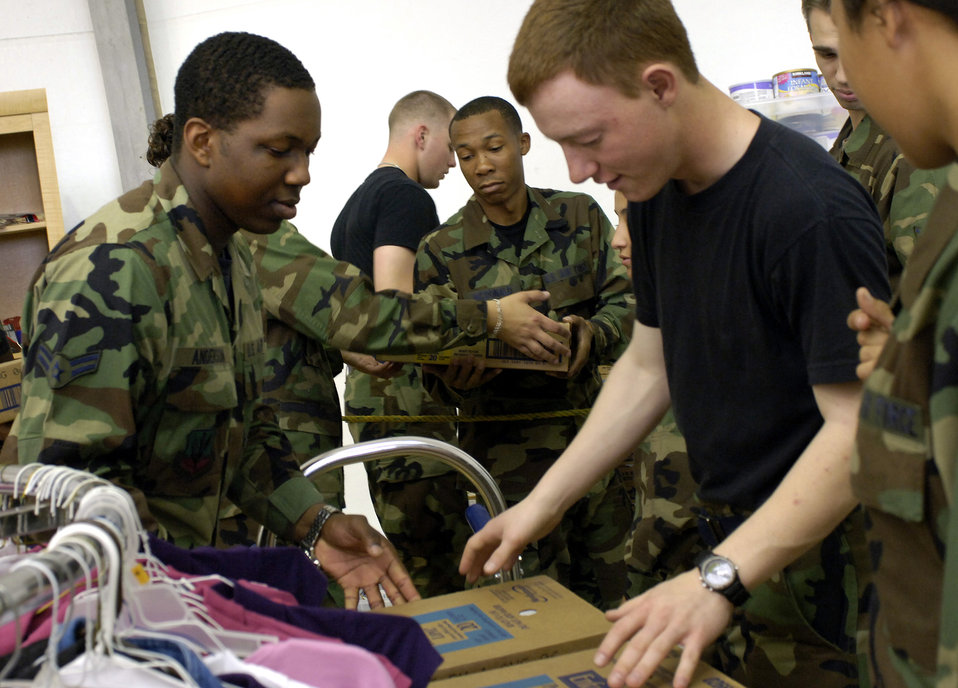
Keesler Airmen answer call for help

Airmen from Keesler Air Force Base, Miss., organize, sort and stock donated items for the community of Gulfport, Miss. Airmen from Keesler AFB have logged more than 38,000 volunteer hours since Hurricane Katrina.